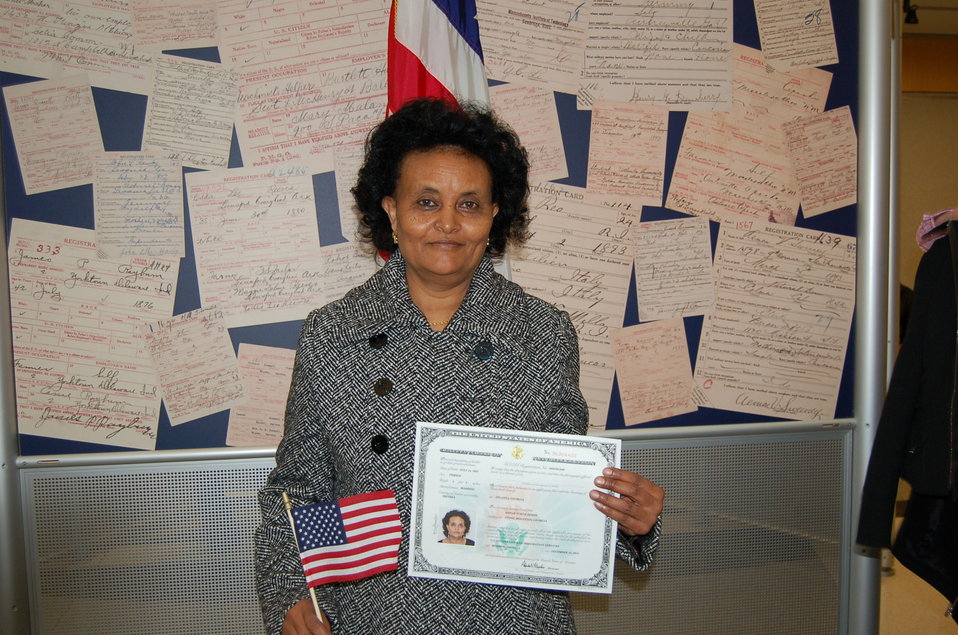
New Citizens